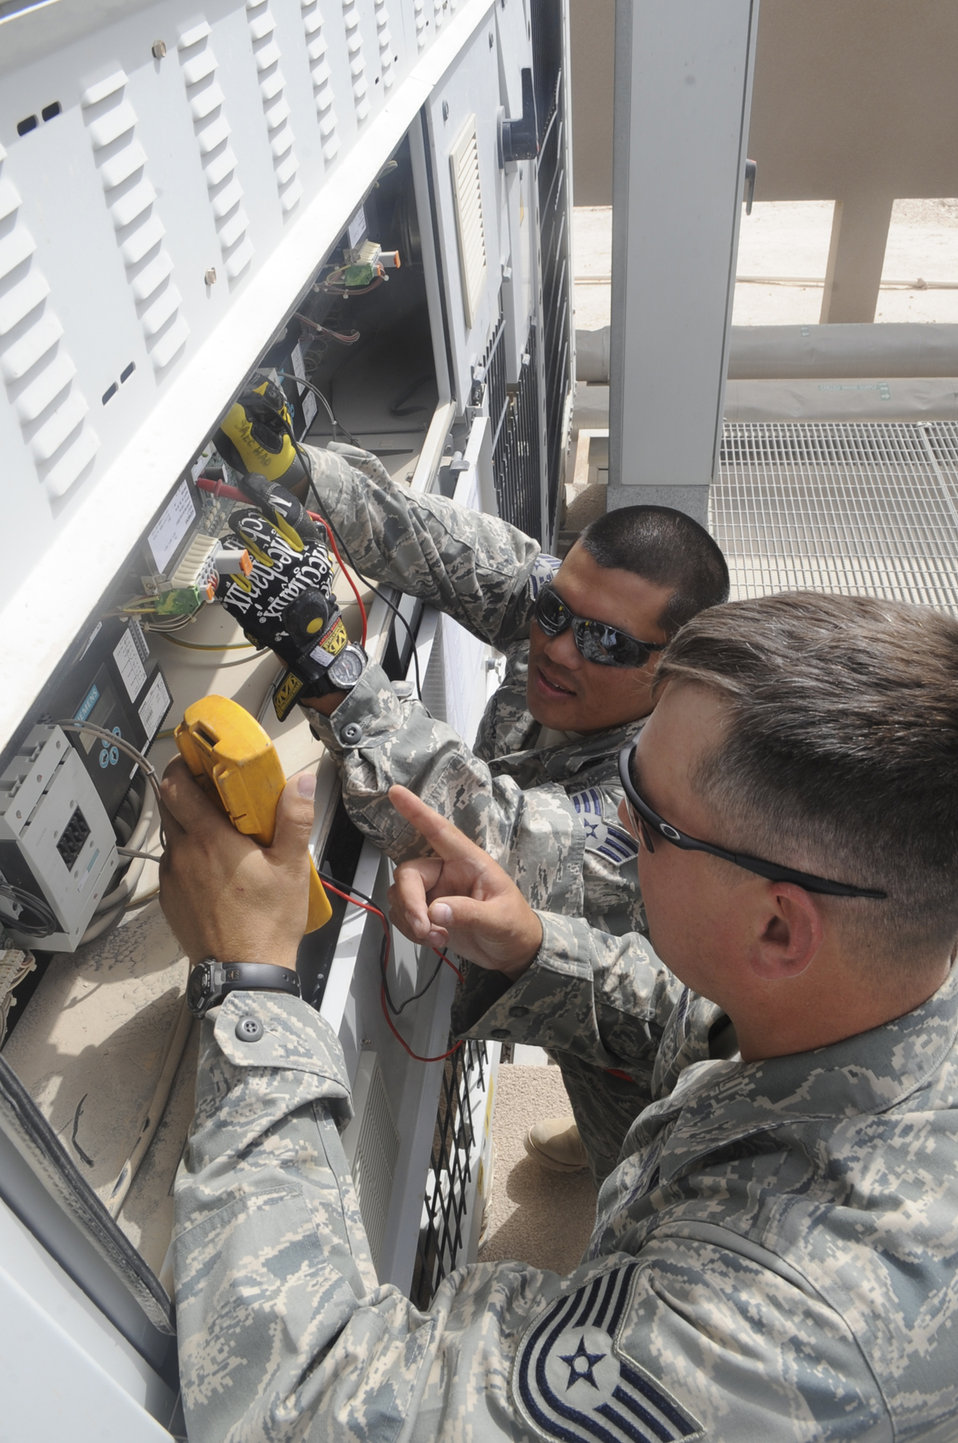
HVAC Cooling them down

Senior Airman Kaota Saecho (rear) and Tech. Sergeant Joe Osborne, 379th Expeditionary Civil Engineer Squadron heating, ventilation, air-conditioning and refrigeration technicians, check the voltage July 2 on chiller that provides cool air to the Combined Air Operations Center at this air base in Southwest Asia. Airman Saechao is a native of Redding, Calif., and is deployed from Luke Air Force Base, Ariz., while Sergeant Osborne hails from Newton, N.J., and is stationed at Andrews Air Force Base, M.D.